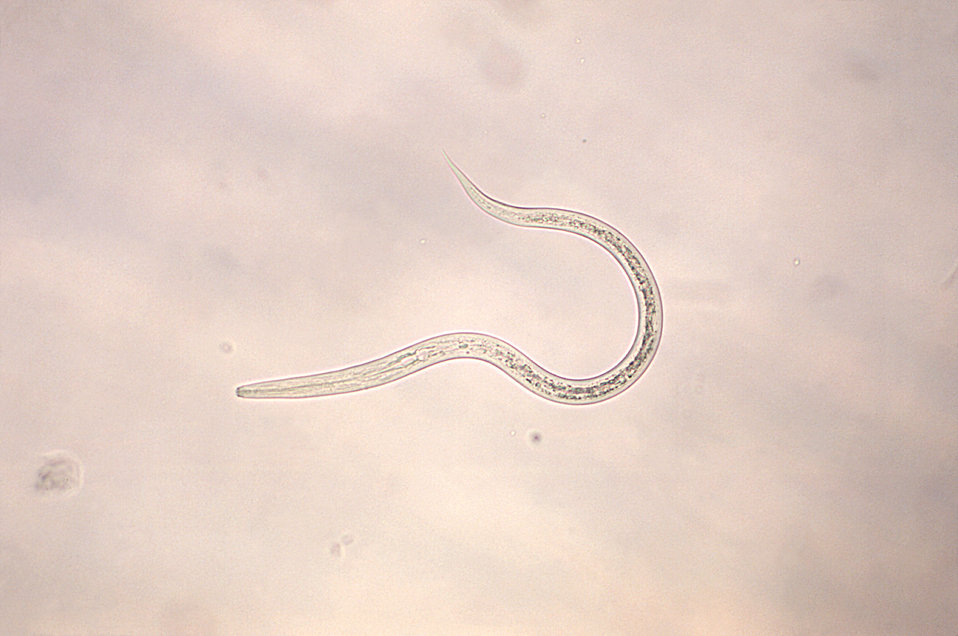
Hookworm filariform larva.